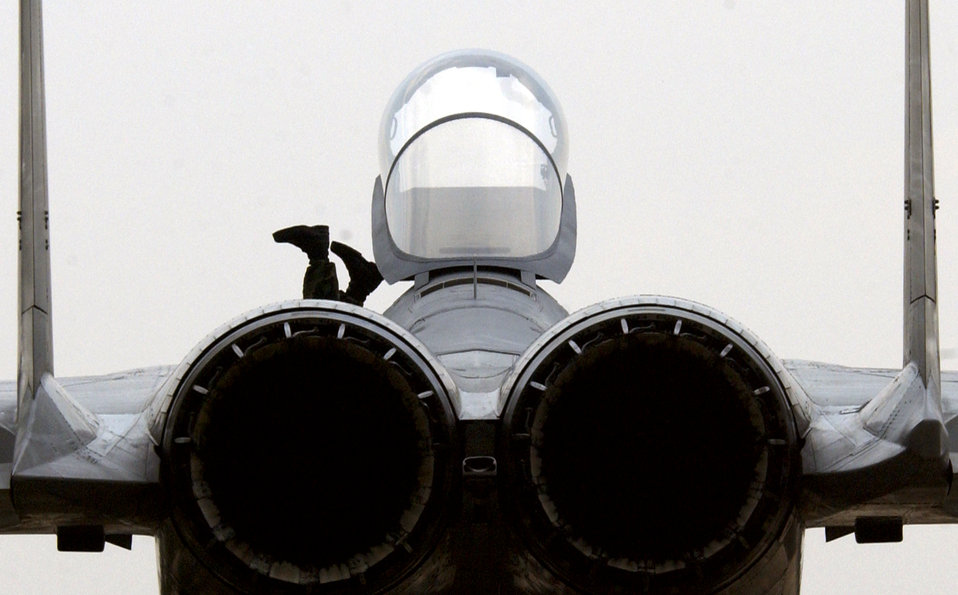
Just a foot or two

KORAT AIR BASE, Thailand (AFPN) -- Feet are all that show as an airman from the 12th Aircraft Maintenance Unit at Elmendorf Air Force Base, Alaska, inspects his F-15C Eagle jet during Cope Tiger 2003. The unit is in Thailand for the annual exercise that gives servicemembers from eight different U.S. bases and the two other countries an opportunity to hone their deployment and employment skills and improve air-combat techniques while building stronger relationships.